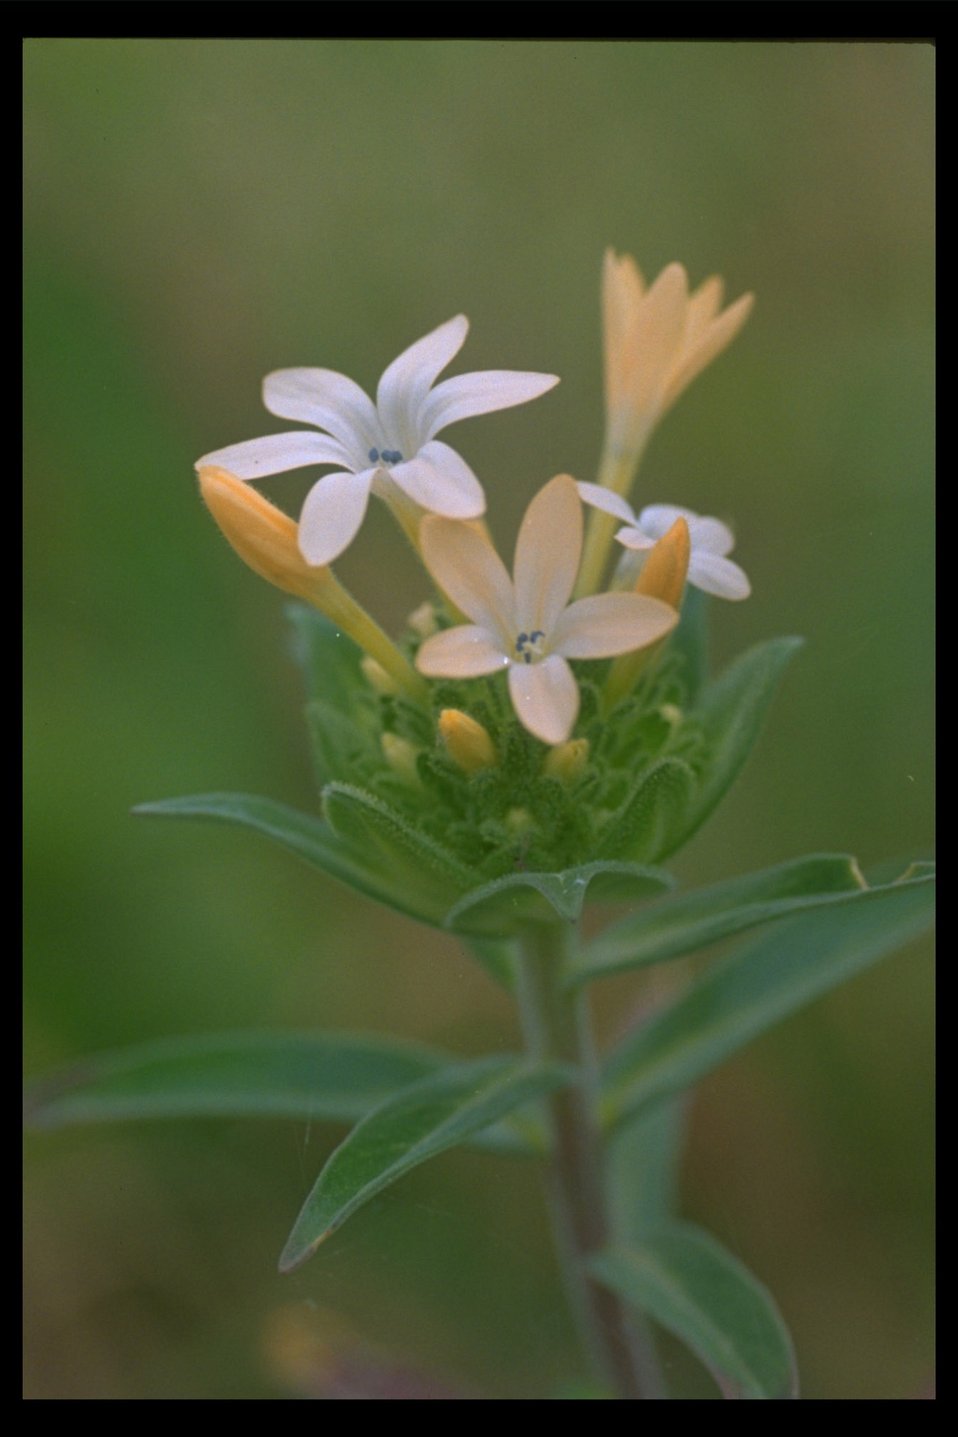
Grand Collomia (Collomia grandiflora) found at Upper Table Rock.